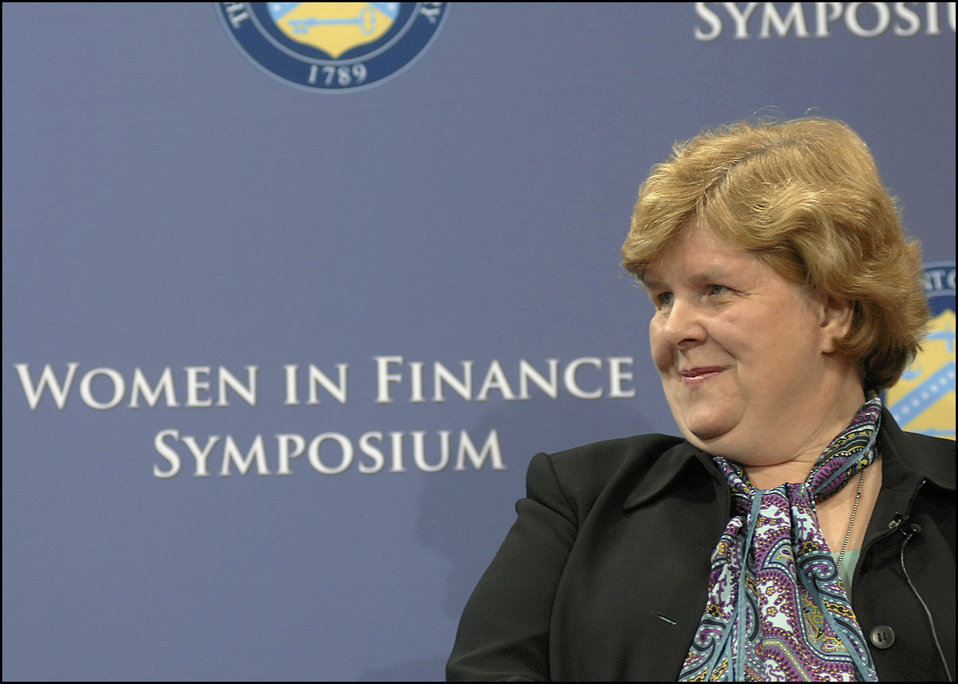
Women in Finance Symposium, 03/29/2010

Chair of the Council of Economic Advisers Christina Romer at the Women in Finance Symposium, March 29, 2010.